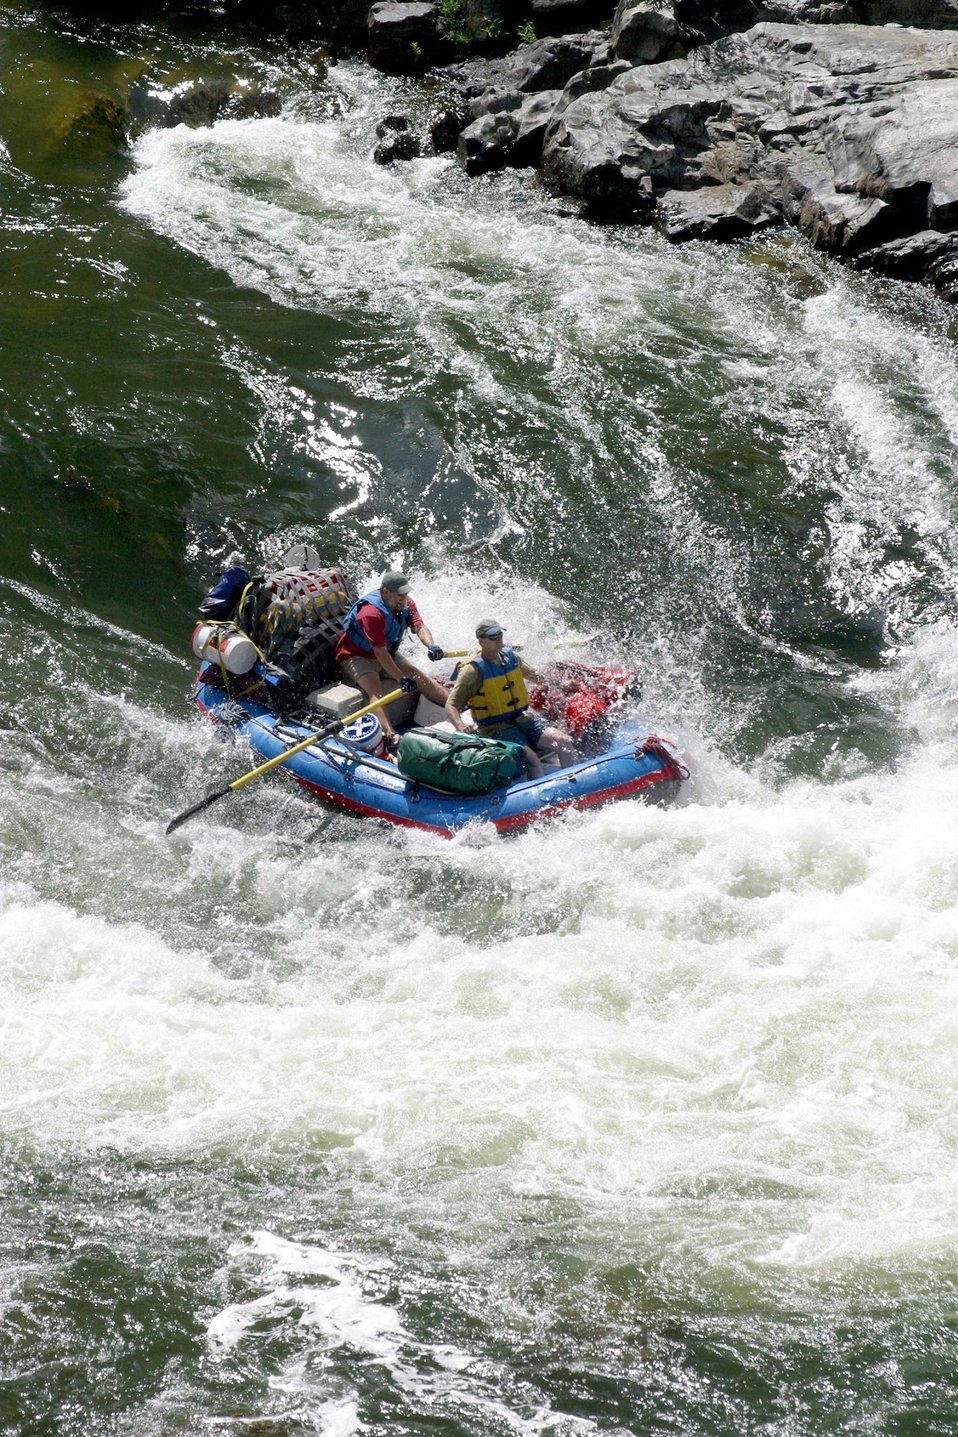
Boater at Grave Creek Falls